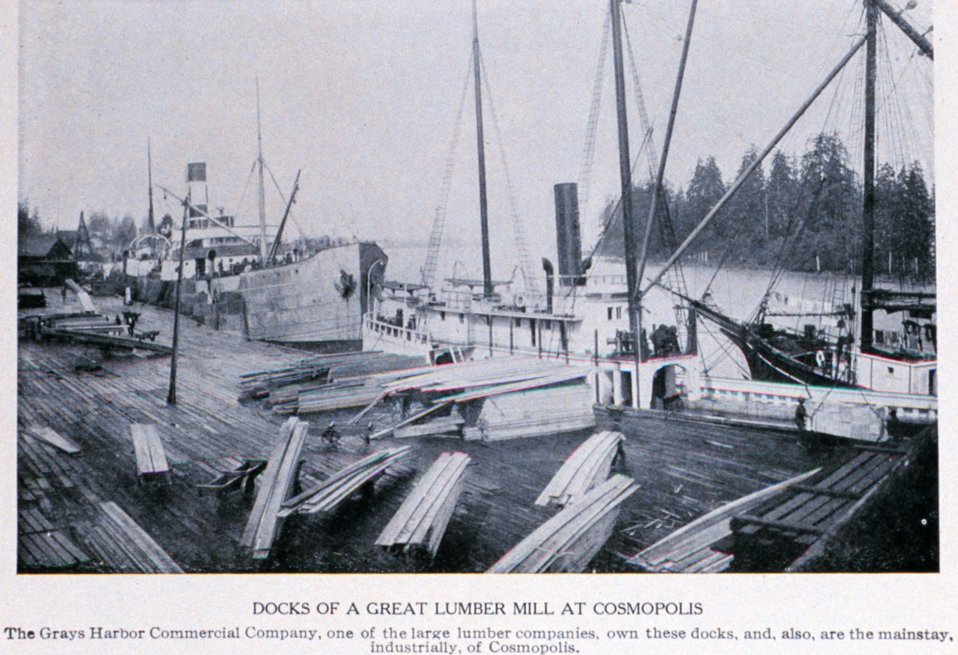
'The Docks of a Great Lumber Mill at Cosmopolis', Grays Harbor. In: 'Puget Sound and Western Washington Cities-Towns Scenery', by Robert A. Reid, Robert A. Reid Publisher, Seattle, 1912. P. 156.